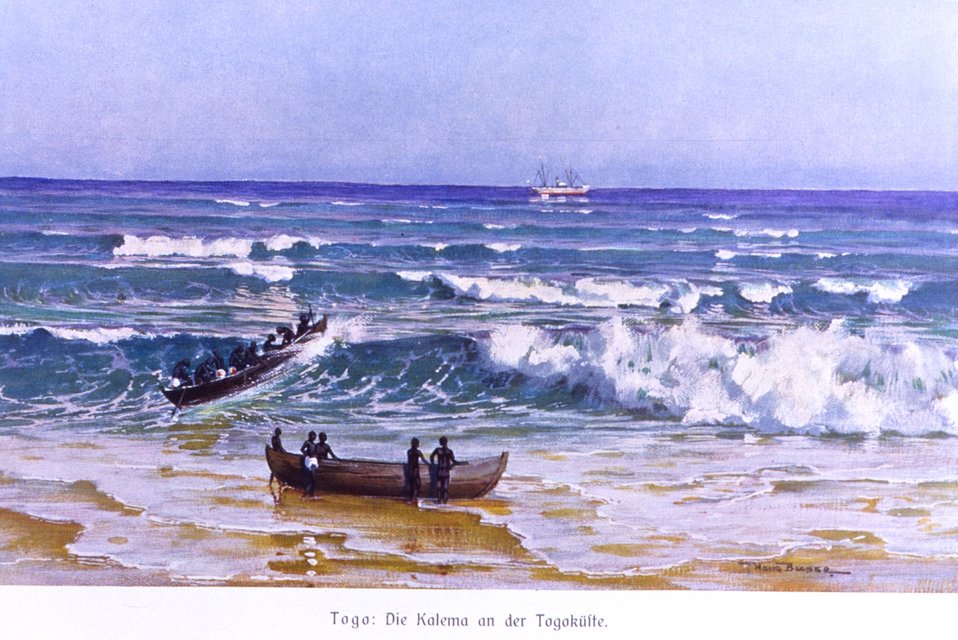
Offloading a cargo vessel through the surf at Togo, German colonial Africa. In: 'Das Deutsche Kolonialreich,' by Hans Meyer, 1909. Vol II, p. 22. Library Call Number: Cfd M612 d